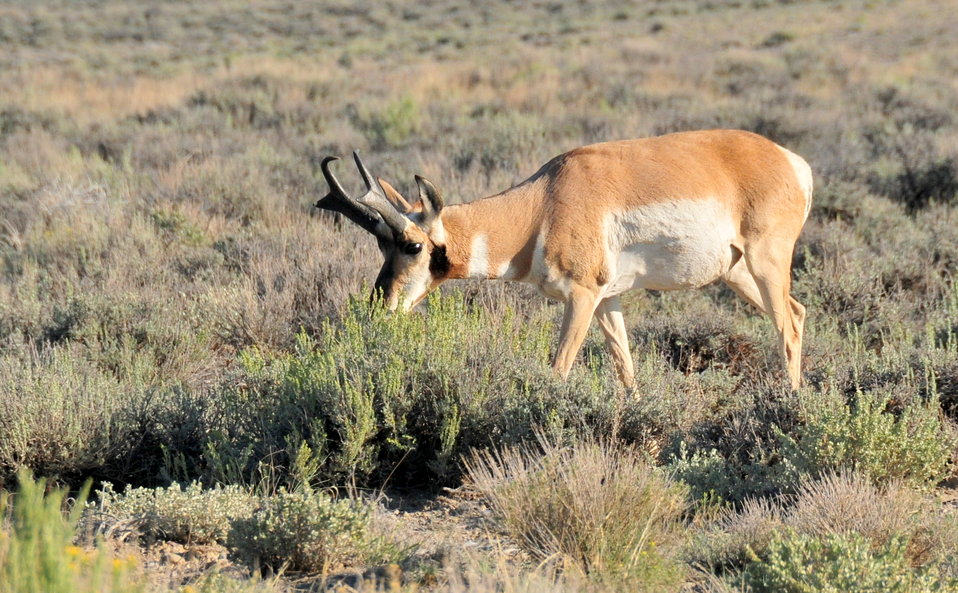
Pronghorn Buck Seedskadee NWR 7